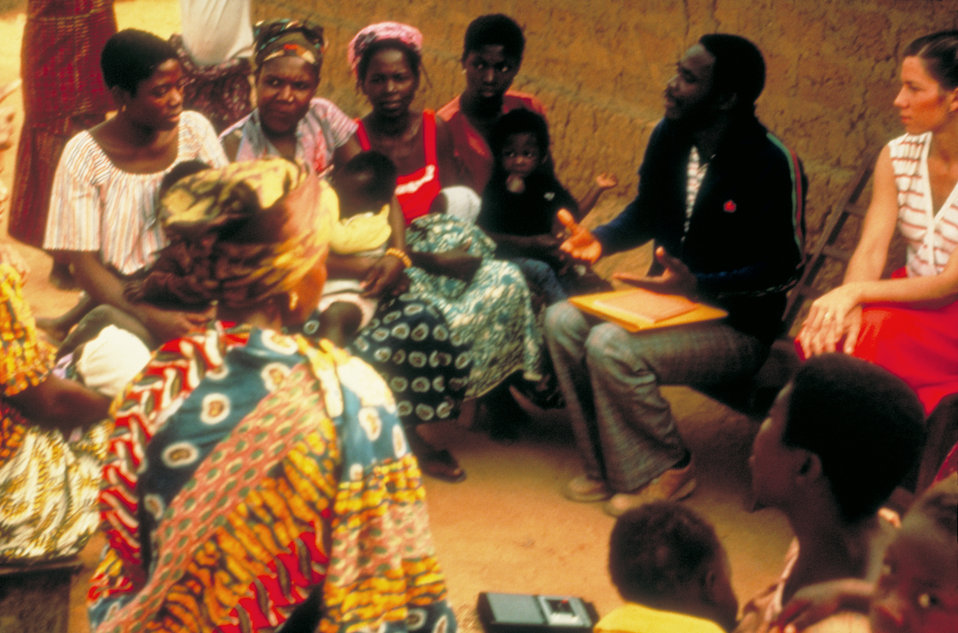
EIS officer with African mothers and children.